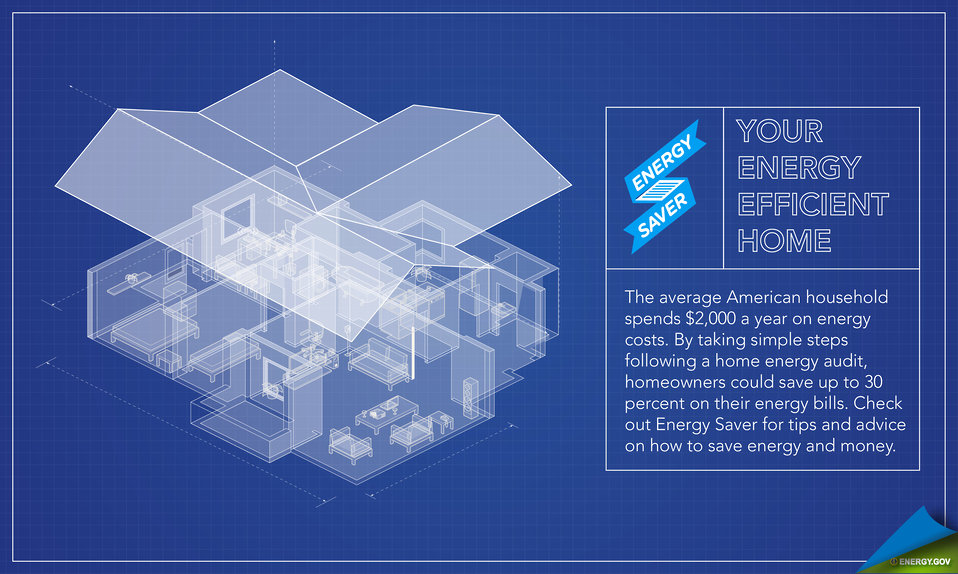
The Energy Efficient Home